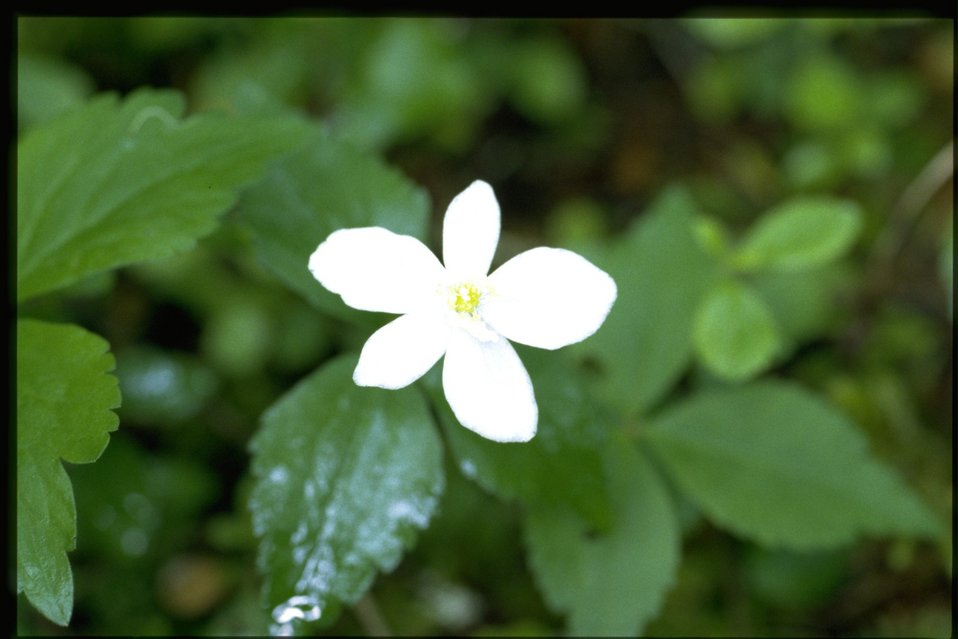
Medium shot of Anemone deltoidea.